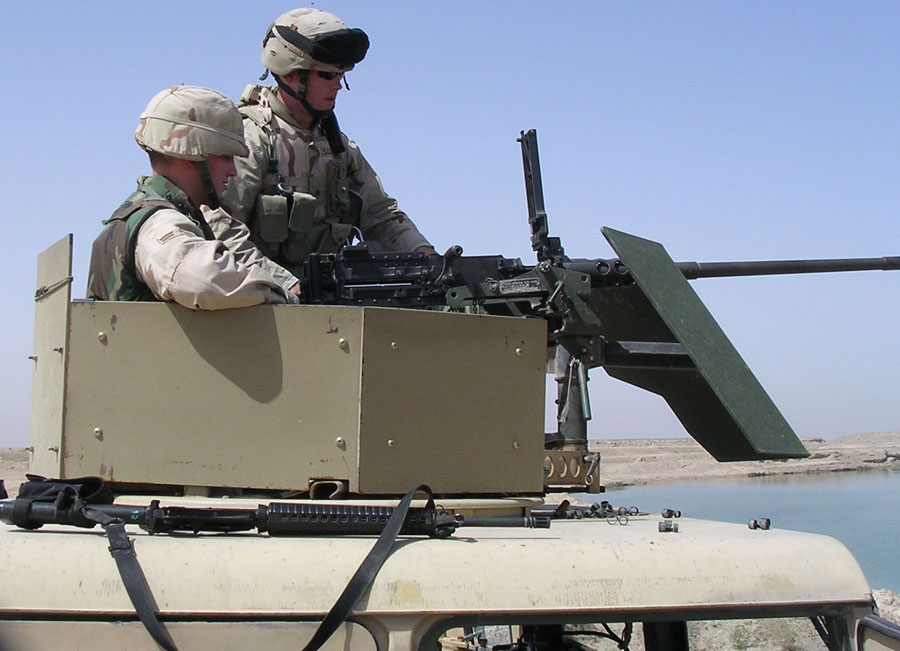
Teamwork

TALLIL AIR BASE, Iraq -- (Left) Airman 1st Class Mitchell Zipprich and a Solider squeeze off a few practice rounds on a machine gun attached to a Humvee in the desert surrounding the base. The vehicle is used to provide protection for the joint crew of Air Force and Army civil engineers who travel off base to improve conditions for Soldiers and Iraqis. Airman Zipprich is assigned to the 732nd Expeditionary Civil Engineering Squadron's Detachment 2.